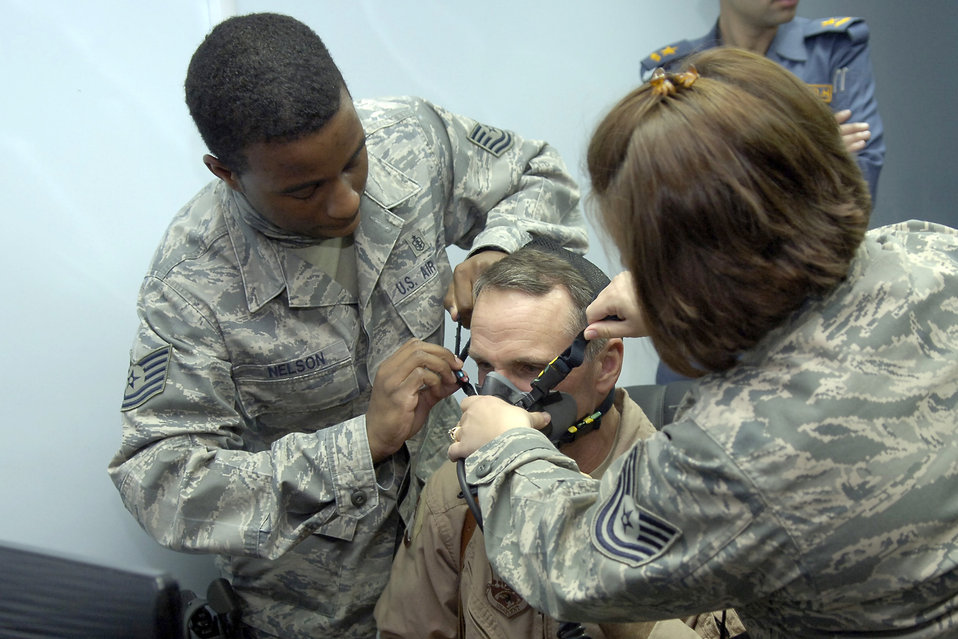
ROBD2

Tech. Sgt. Pierre Nelson and Tech. Sgt. Jennifer Flecker tighten the straps on the face mask for Brig. Gen. Anthony Rock as part of a demonstration of the Iraqi Air Force's first Reduced Oxygen Breathing Device March 14, 2011, in Baghdad. Sergeants Nelson and Flecker are aerospace operational physiology technicians deployed to teach the Iraqi Airman to use the device, which is designed to take the place of the altitude chamber for pilot refresher training. General Rock is the 321st Air Expeditionary Wing commander and Iraq Training and Advisory Mission-Air director.